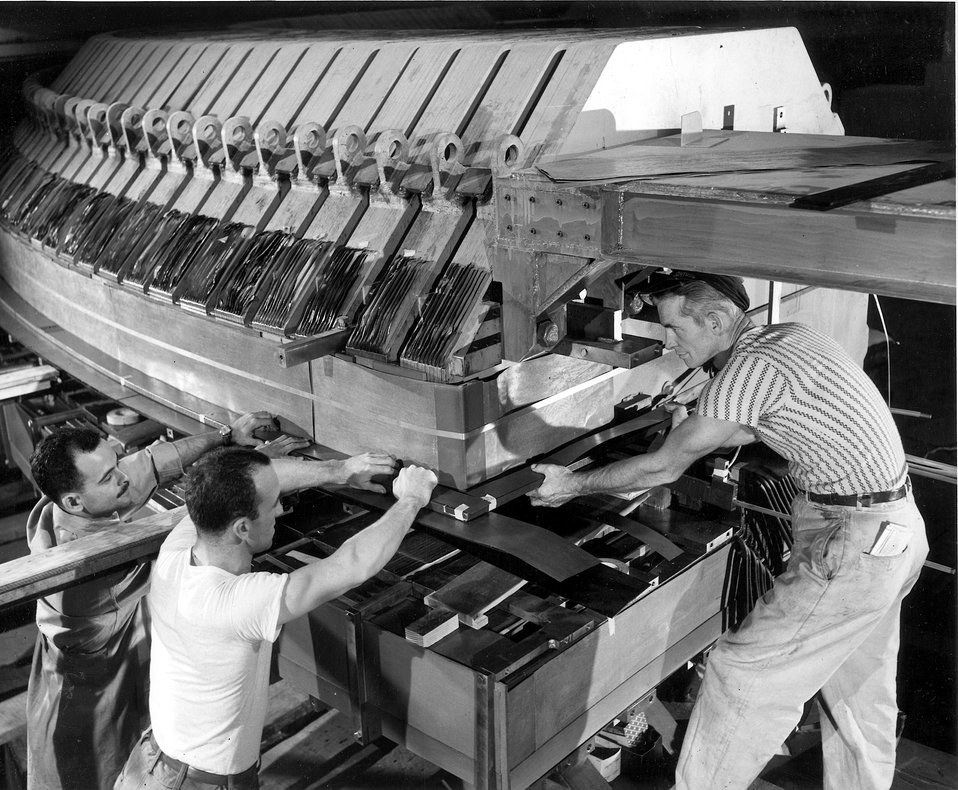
Installation of upper nose coil of main magnet winding. c. 1950